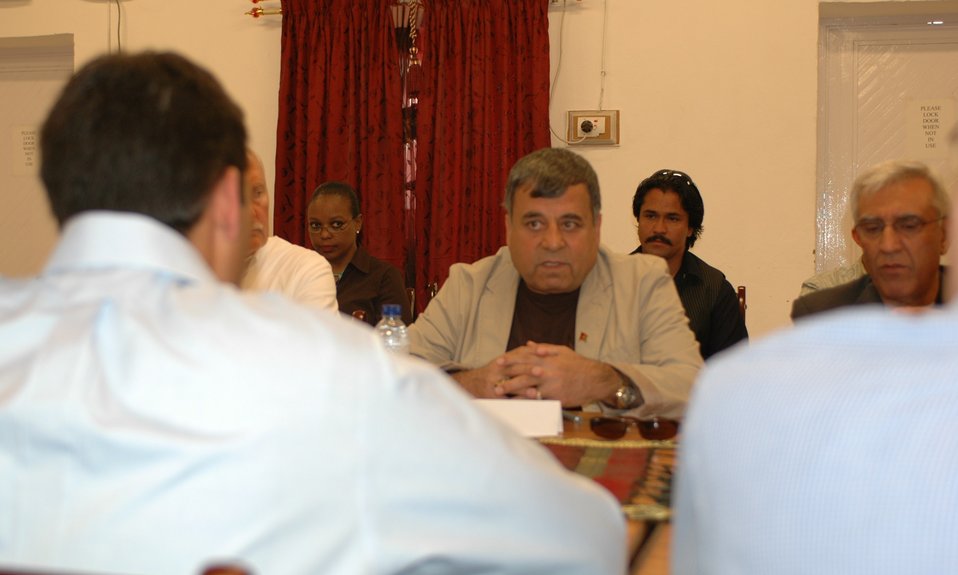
Dr Shah Visits Kandahar April 9, 2010